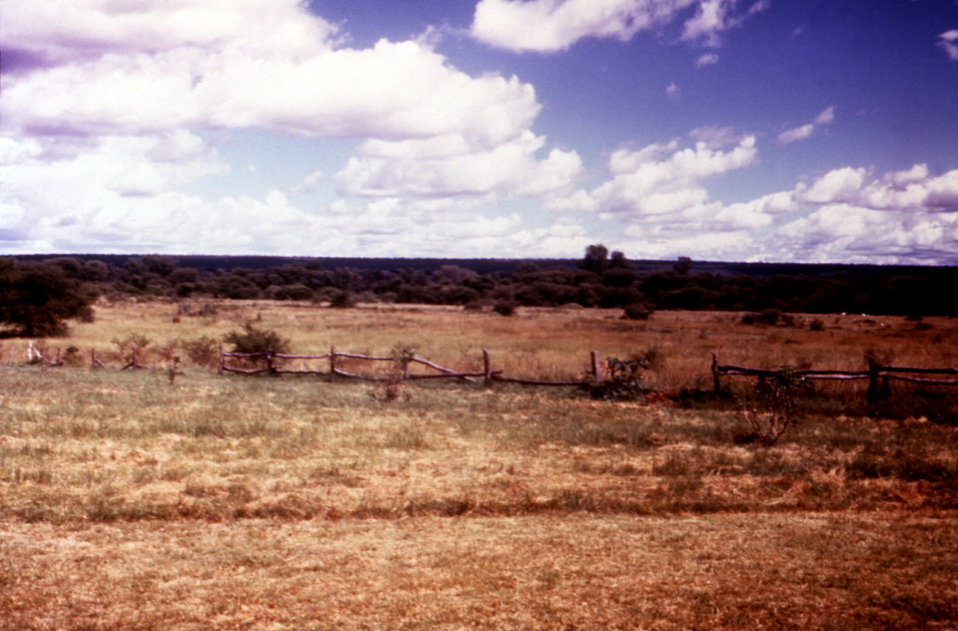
This image of the Zimbabwe countryside, was taken by 2 travelers just days before exhibiting signs of Marburg virus.